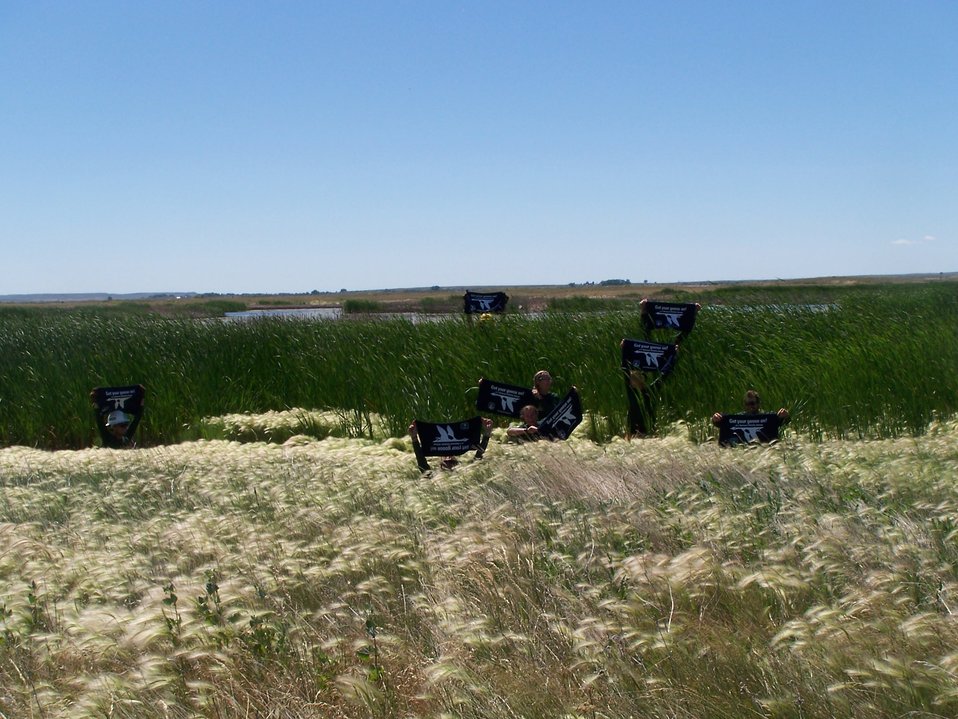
Get Your Goose On! - In the Wetlands

Bowdoin NWR's MCC crew Got Their Goose On in prairie pothole wetlands.